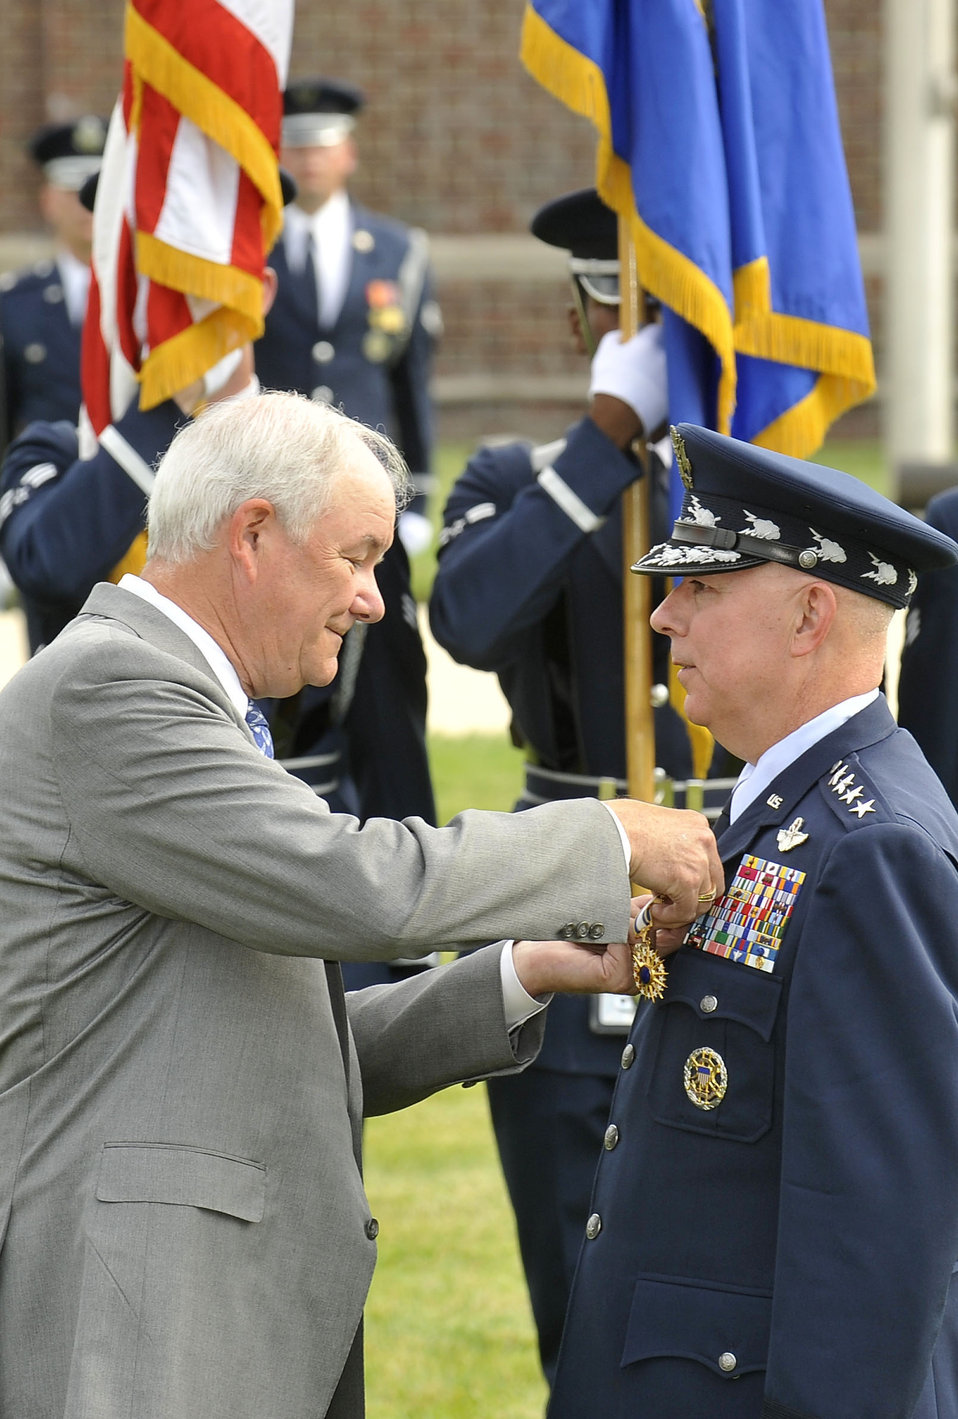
CSAF Retirement Ceremony

Former Secretary of the Air Force Michael Wynne pins the Distinguished Service Medal on Gen. T. Michael Moseley during the general's retirement ceremony on Bolling Air Force Base, D.C., July 11. General Moseley is the 18th chief of staff.